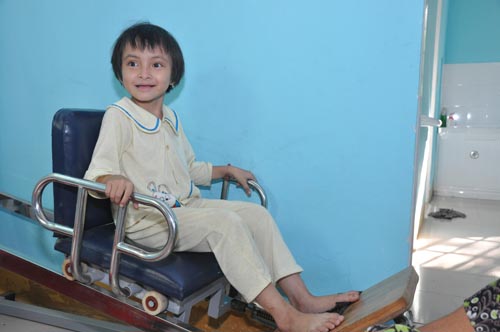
USAID-supported Hao Vang District Health Center, Danang